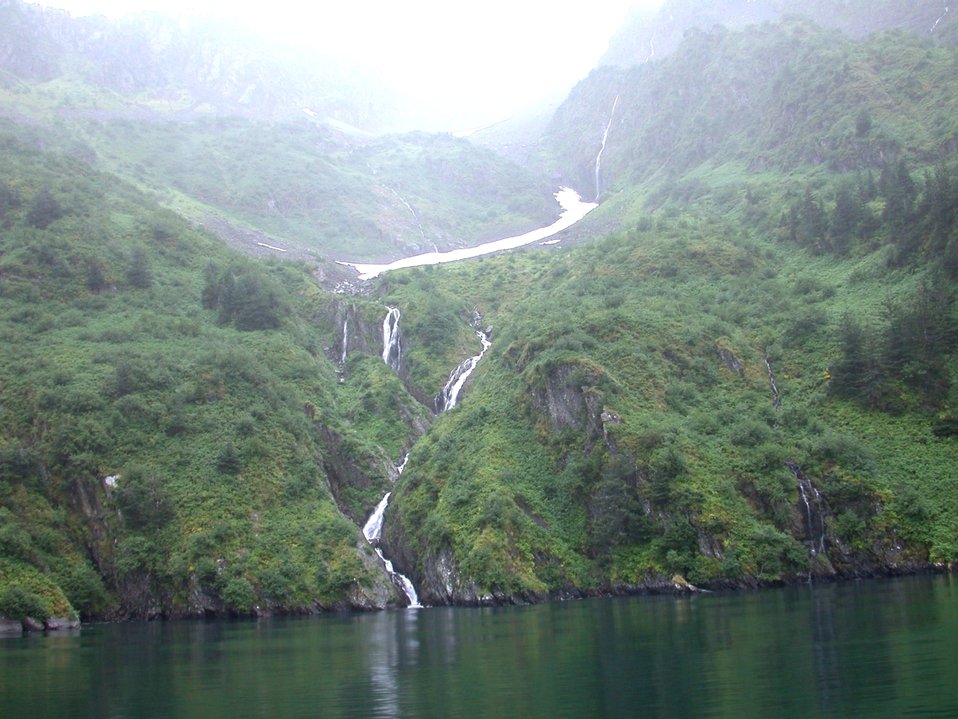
Waterfall in Kenai Fjords area.